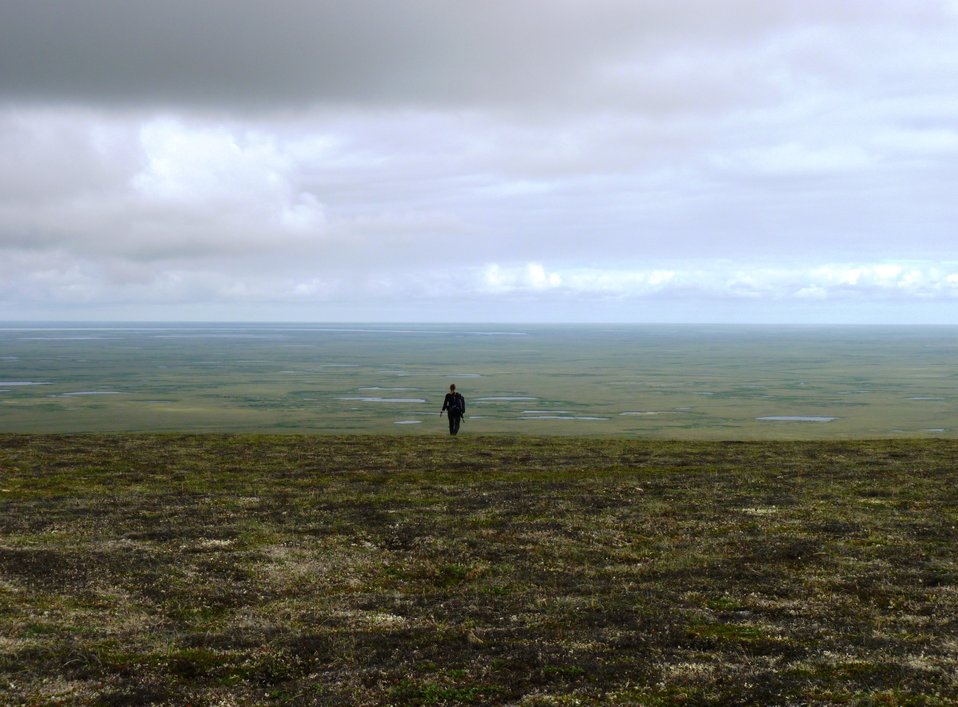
Andreafsky Wilderness, Yukon Delta National Wildlife Refuge